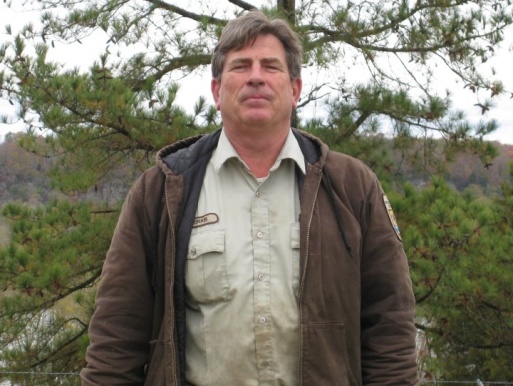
Dale Norris, an Engineering Equipment Operator at Cross Creeks National Wildlife Refuge, served in the U.S. Navy from 1976 to 1989 as a Chief Engineer for Surface Warfare.